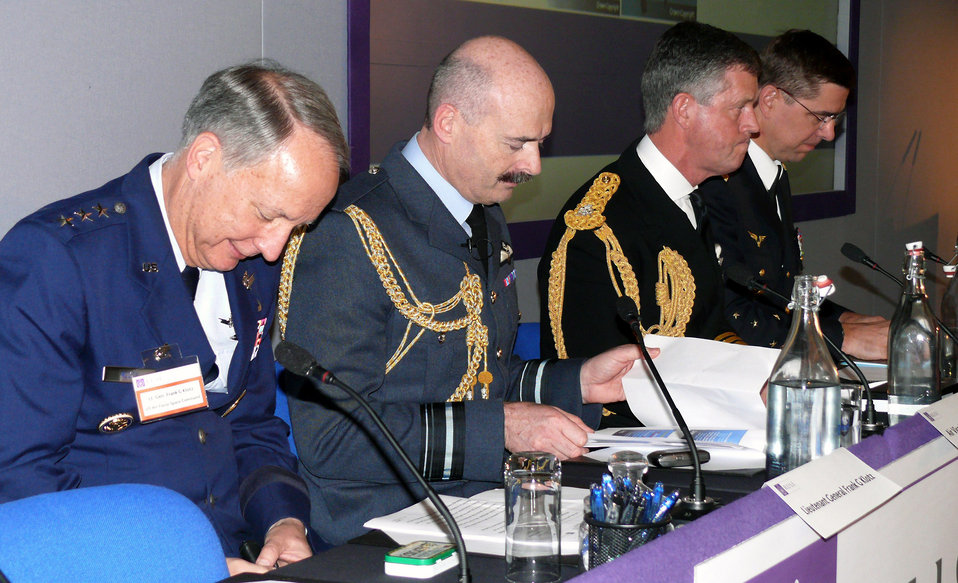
Aerospace leaders discuss challenges, opportunities

Lt. Gen. Frank G. Klotz (left), prepares for his speech at the Royal United Services Institute's air power conference in London May 24. Also shown are British Air Marshal T. M. Anderson, assistant chief of staff of the Royal Air Force, British Vice Adm. A. J. Johns, commander in chief of the British Naval Home Command and Rear Admiral Fleet Air Arm, and French Gen. D'Armee Abrial, French air force chief of staff. All were guest speakers at the conference to discuss challenges facing air power. General Klotz is vice commander of U.S. Space Command.